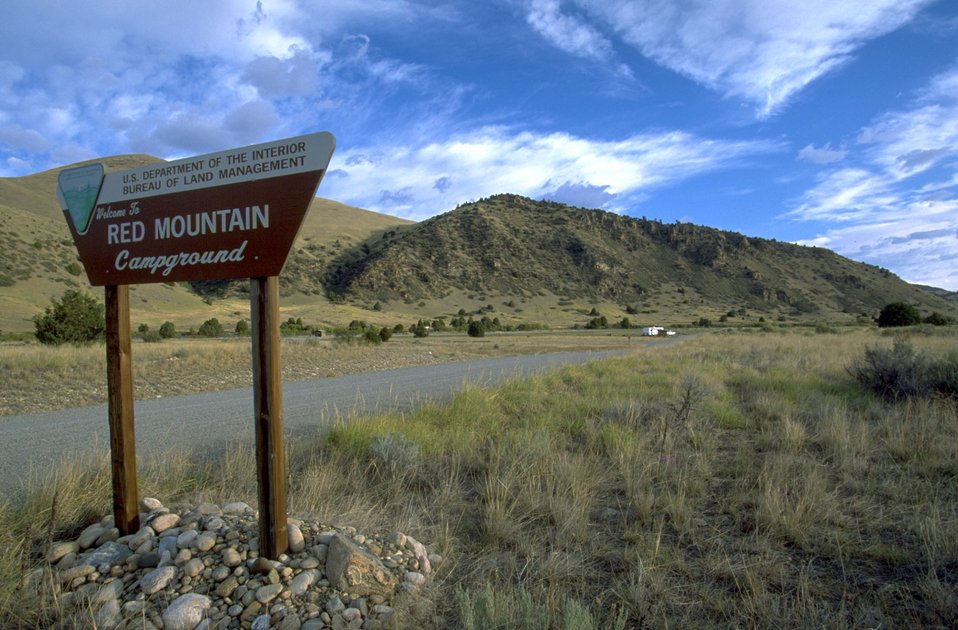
Entrance Sign at Red Mountain Campgrounds